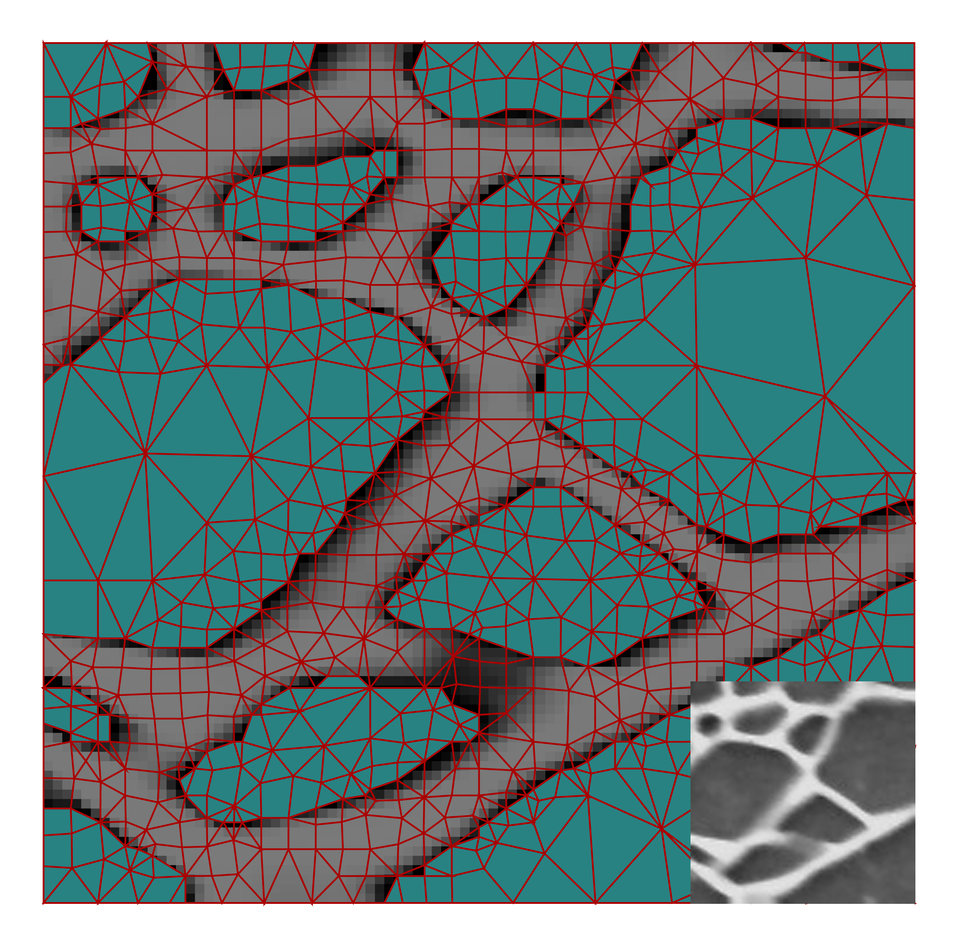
Software; Math; Computer Science

Once provided with a microscope's image of a composite material (inset), OOF software can help analyze the effects of the material's internal structure on stress. Using OOF, researchers can identify the different substances (blue and gray areas) that make up the material and compute their response to stress or other effects, providing clues about how the overall sample will behave.